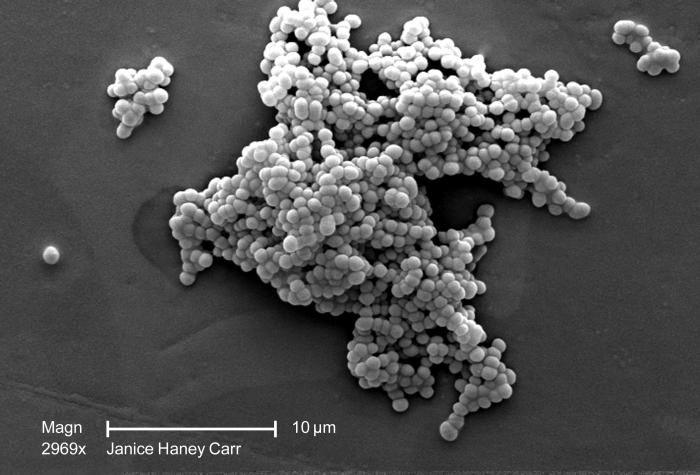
Under a moderate magnification of 2,969X, this scanning electron micrograph (SEM) revealed a number of clusters of Gram-positive, beta-hemolytic Group C Streptococcus sp. bacteria. See PHIL 10591 for a colorized version of this image.